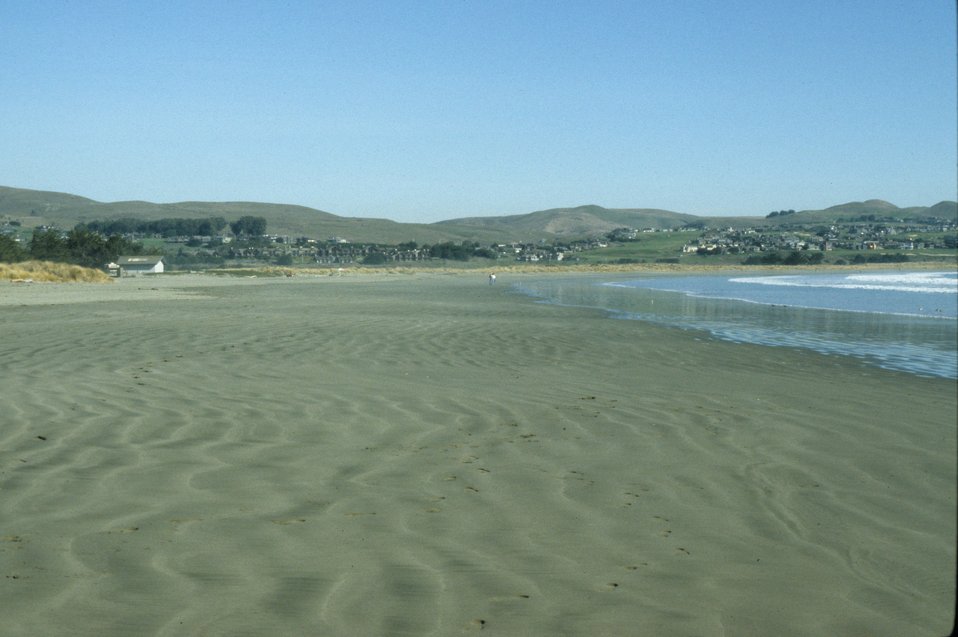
Doran Beach